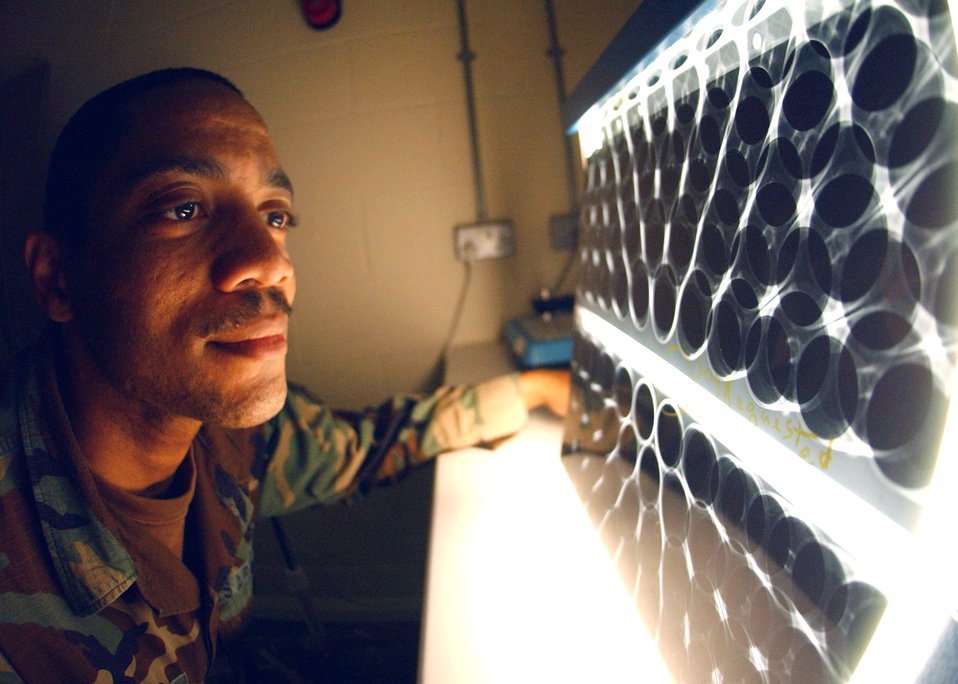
Non-destructive inspection

Staff Sgt. Corey Fletcher looks at X-rays from an MH-53 Pave Low engine air particle separator at Royal Air Force Base Mildenhall, England, on Tuesday, June 20. Sergeant Fletcher checks for structural flaws, cracks, defects and foreign object damage in aircraft parts by using X-rays and flourescent green penetrant. He is a non-destructive inspection specialist with the 100th Maintenance Squadron.